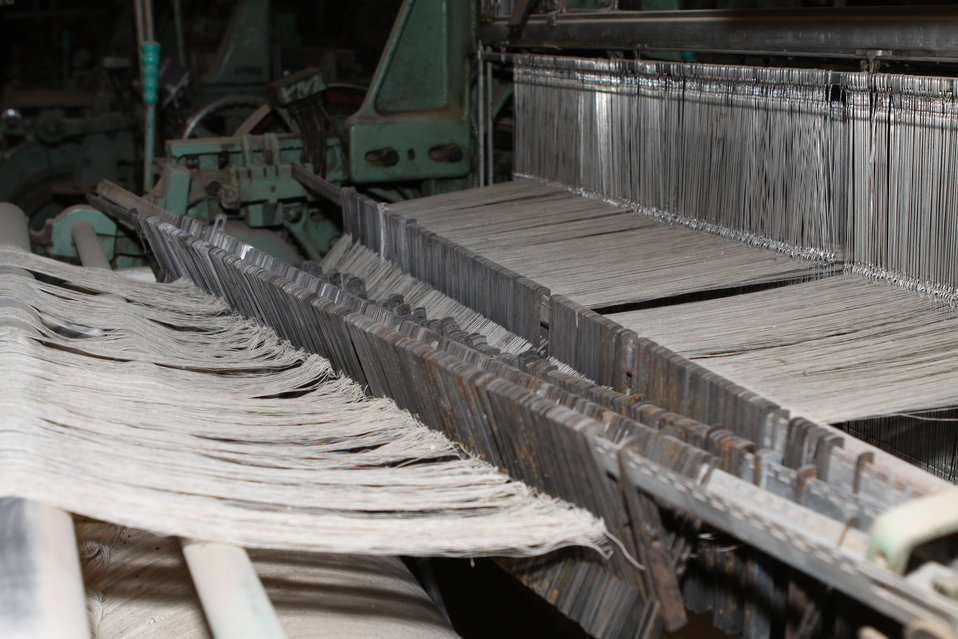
100525 Hirat Textile Company 739